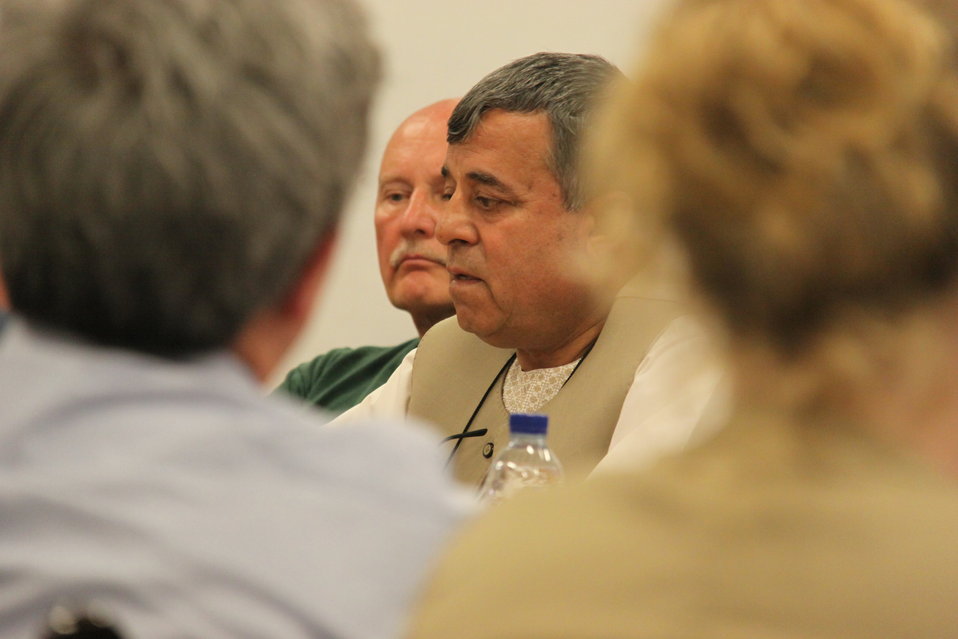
Meeting with Local Leaders in Kandahar